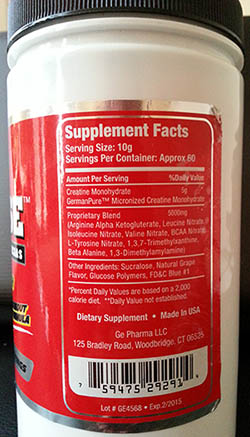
RECALLED – Dietary Supplement

September 12, 2013 – Product Recall – GE Pharma, LLC Announces a Recall of Dietary Supplement Creafuse Powder Due to Possible Health Risk.